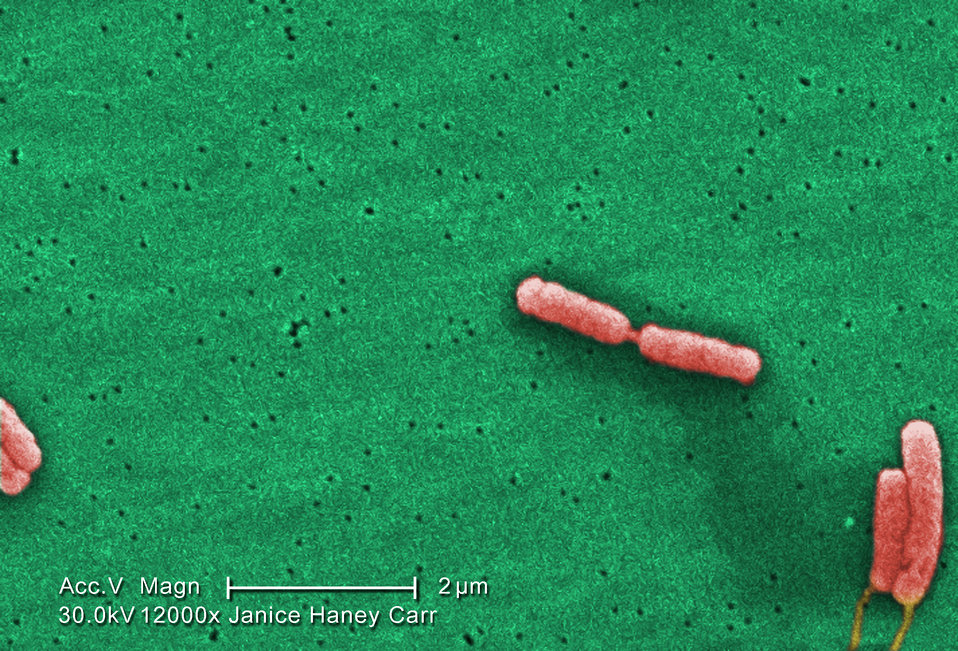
Highly magnified 12000X, this colorized scanning electron micrograph (SEM) depicted six Gram-negative Legionella pneumophila bacteria. Note that you're able to see a flagella emanating from the lower right organisms. Also note that one bacteria is about to become two, separate entities, as they were finishing the process of cell division. Please see PHIL 11092 through 11152 for additional SEMs of these organisms, specifically PHIL 11109 for a black and white version of this image.